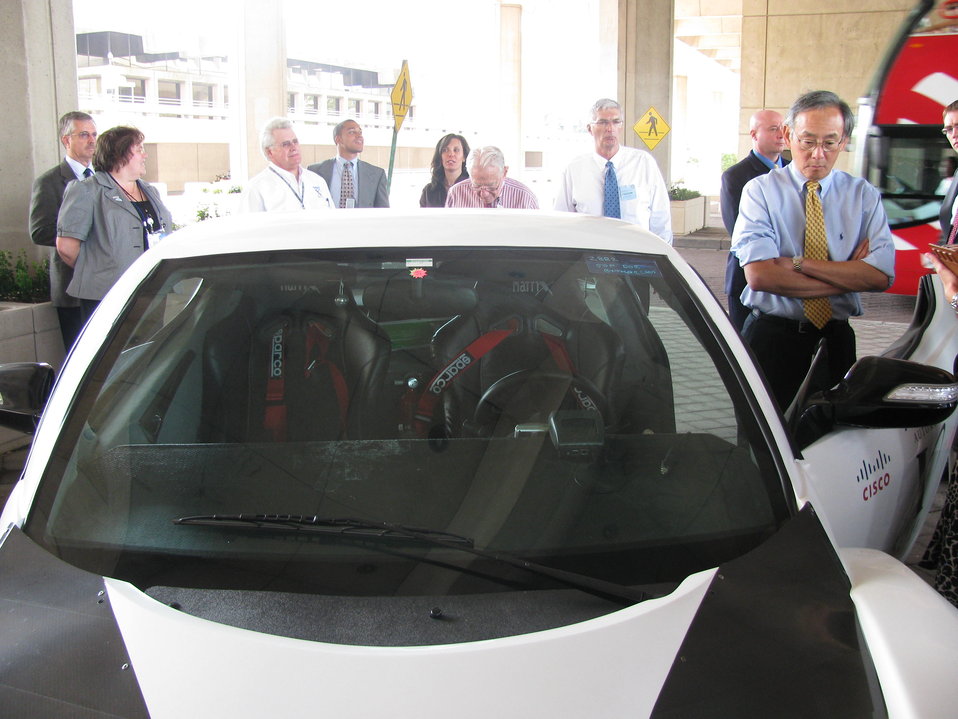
X Prize 016